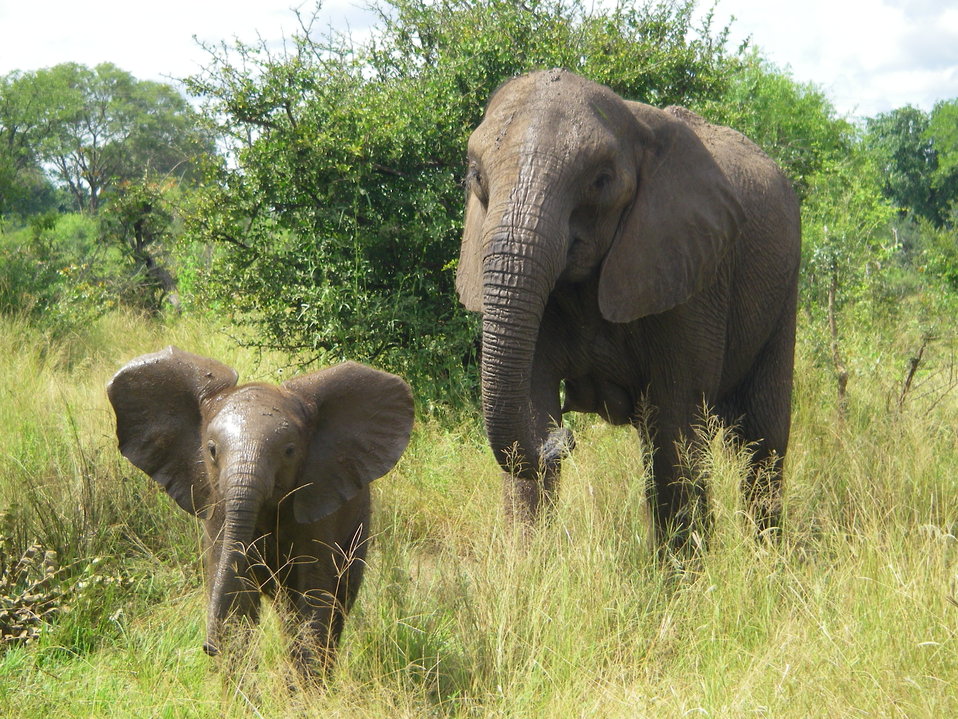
African elephant infant displaying his strength.